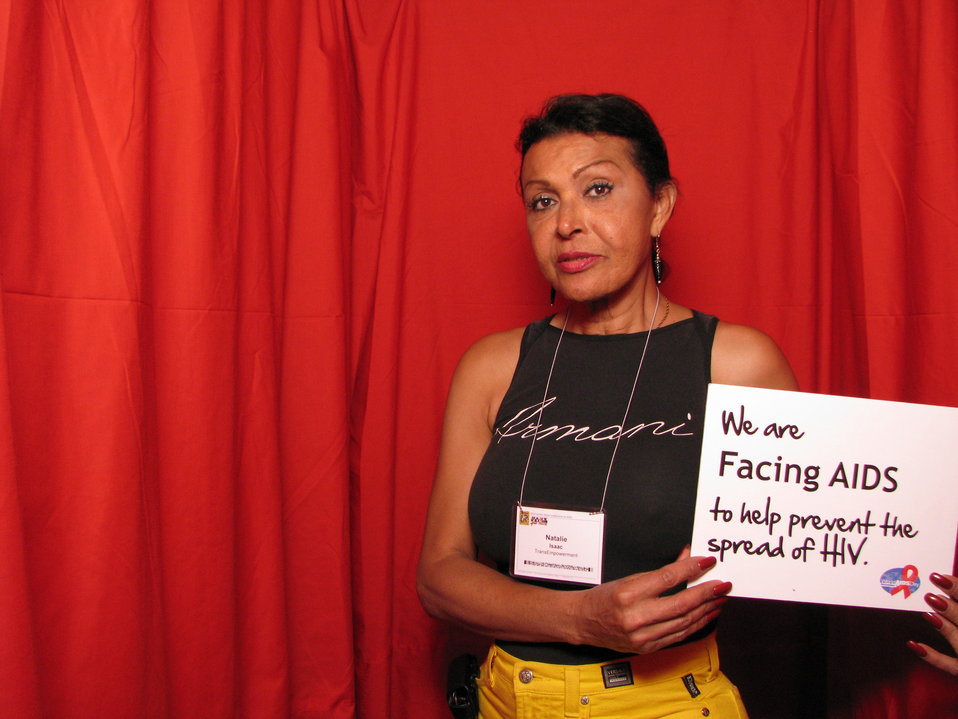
We are FACING AIDS to help prevent the spread of HIV.

From the AIDS.gov photo booth at the U.S. Conference on AIDS, September 2010 (Orlando, FL).